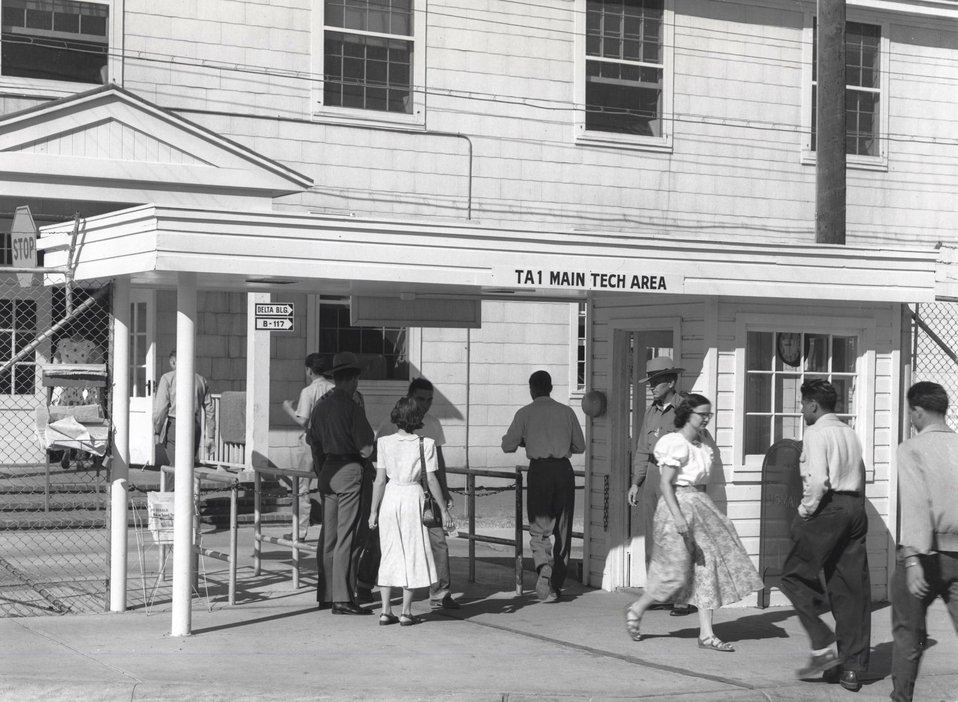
ENTRANCE TO MAIN TECHNICAL AREA